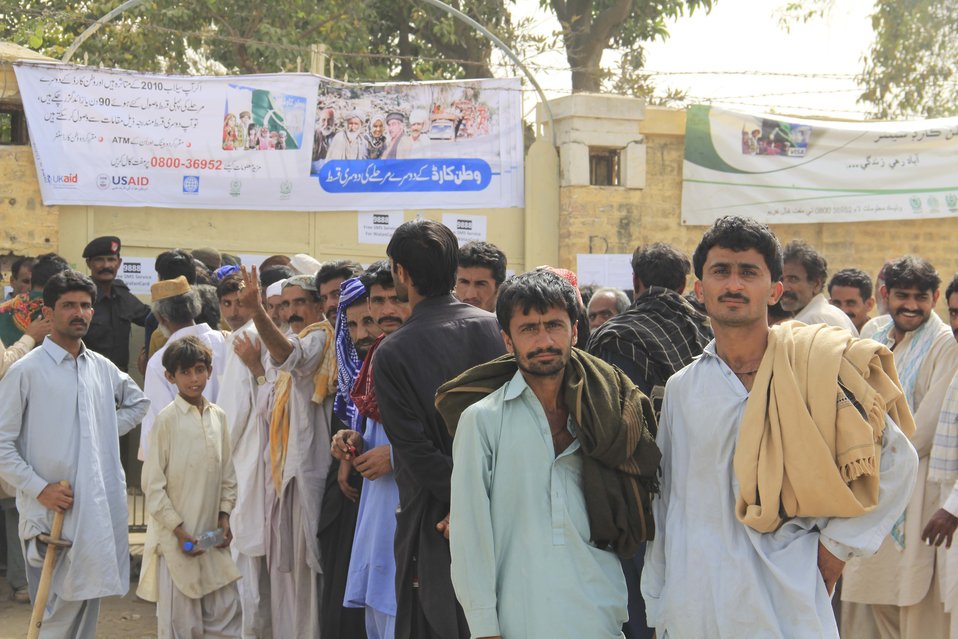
Citizens Damage Compensation Program